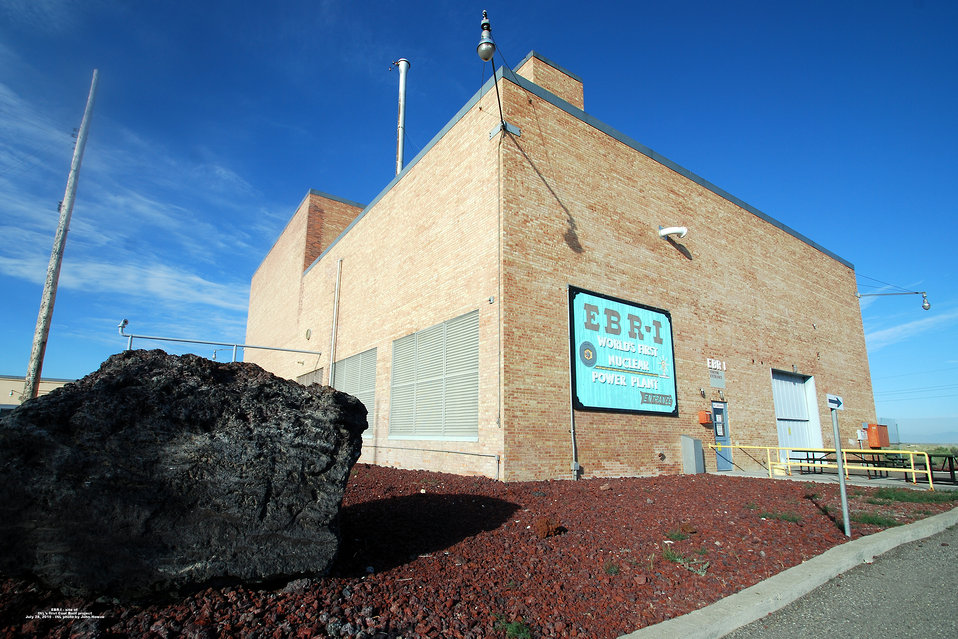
The Experimental Breeder Reactor I National Historical Landmark, located in the Idaho National Laboratory desert site west of Idaho Falls.
A reflective coating installed on portions of its roof in early August 2010 is intended to help cut the building's cooling costs by reflecting some of the sun's rays.